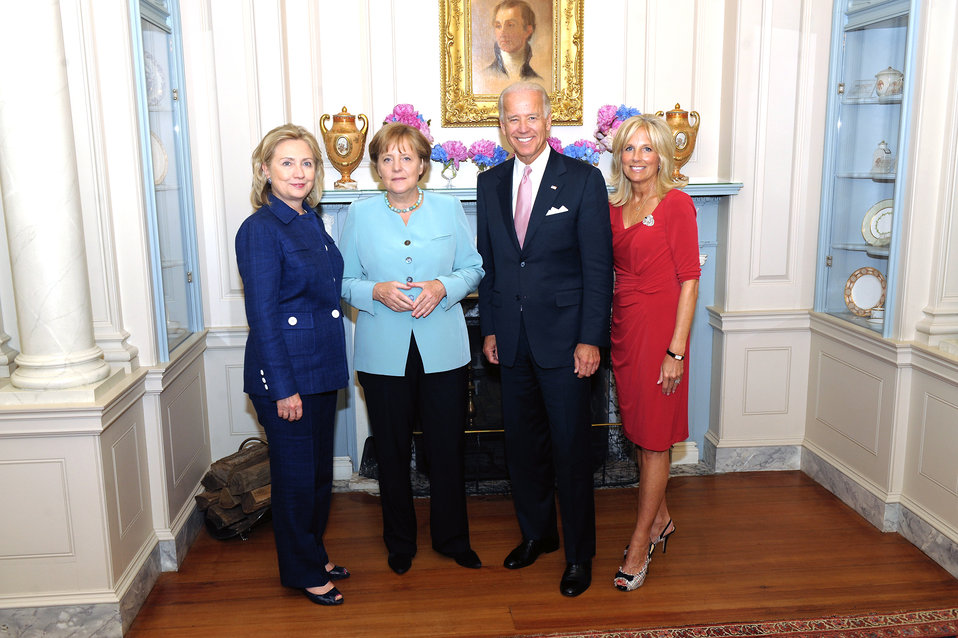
Secretary Clinton, German Chancellor Merkel, Vice President Biden, and Dr. Biden Pose for a Photo

Secretary of State Hillary Rodham Clinton, left; German Chancellor Angela Merkel; second from left; U.S. Vice President Joseph Biden, second from right; and Dr. Jill Biden, right; pose for a photo at the U.S. Department of State in Washington, D.C., on June 7, 2011.